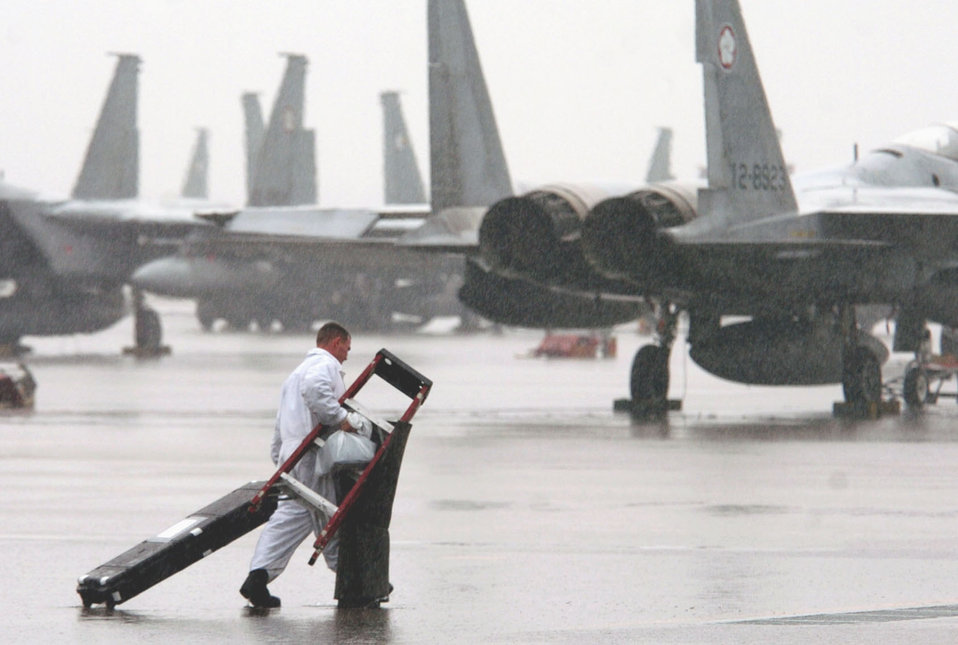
Wet and weary

HYAKURI AIR BASE, Japan -- An F-15 Eagle crew chief heads back to a hangar in the middle of a downpour during exercise Keen Sword 2005 here Nov. 16. Keen Sword is designed to increase the defensive readiness of Japanese and American forces though training in air, ground and sea operations, and to improve the ability to work together.